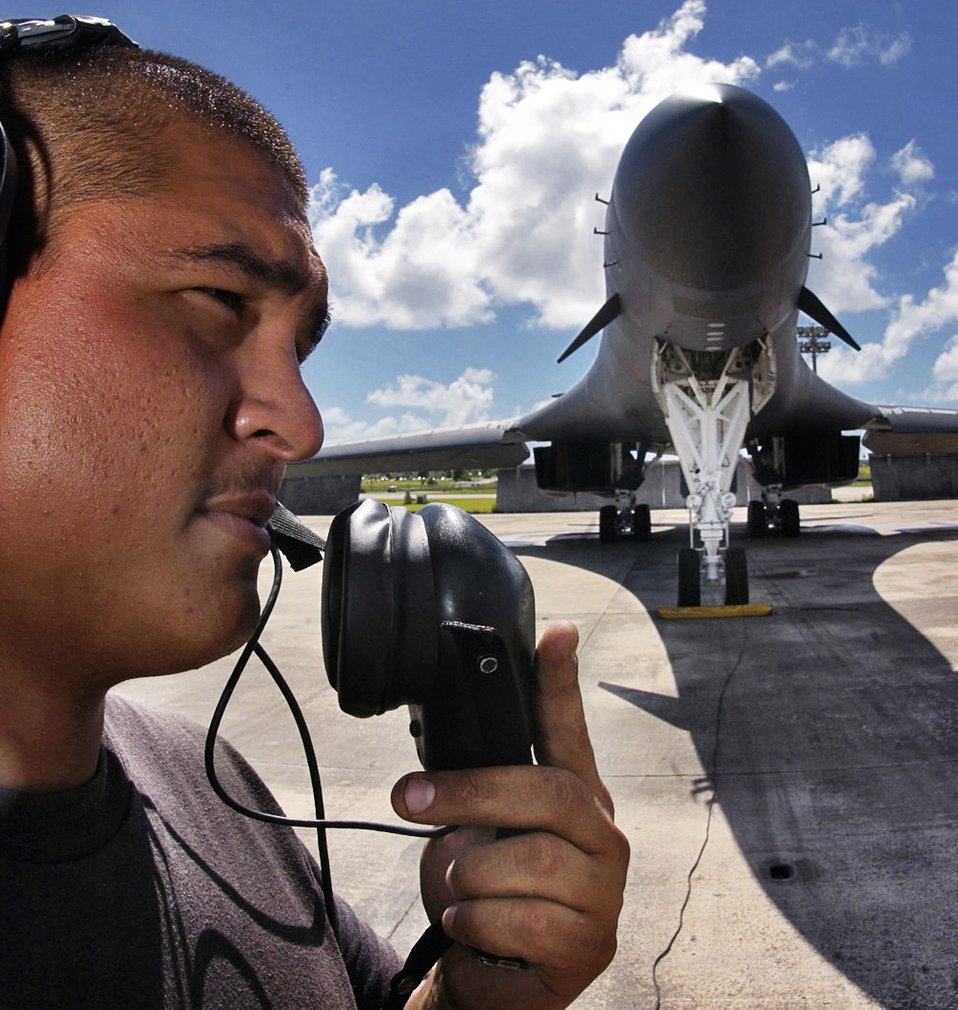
Preflight checks

ANDERSEN AIR FORCE BASE, Guam -- Senior Airman Kendal Lizama talks to pilots during preflight checks. Six B1-B Lancers and nearly 200 people deployed here from the 28th Bomb Wing from Ellsworth AFB, S.D. Airman Lizama is a crew chief with the 36th Expeditionary Maintenance Squadron.